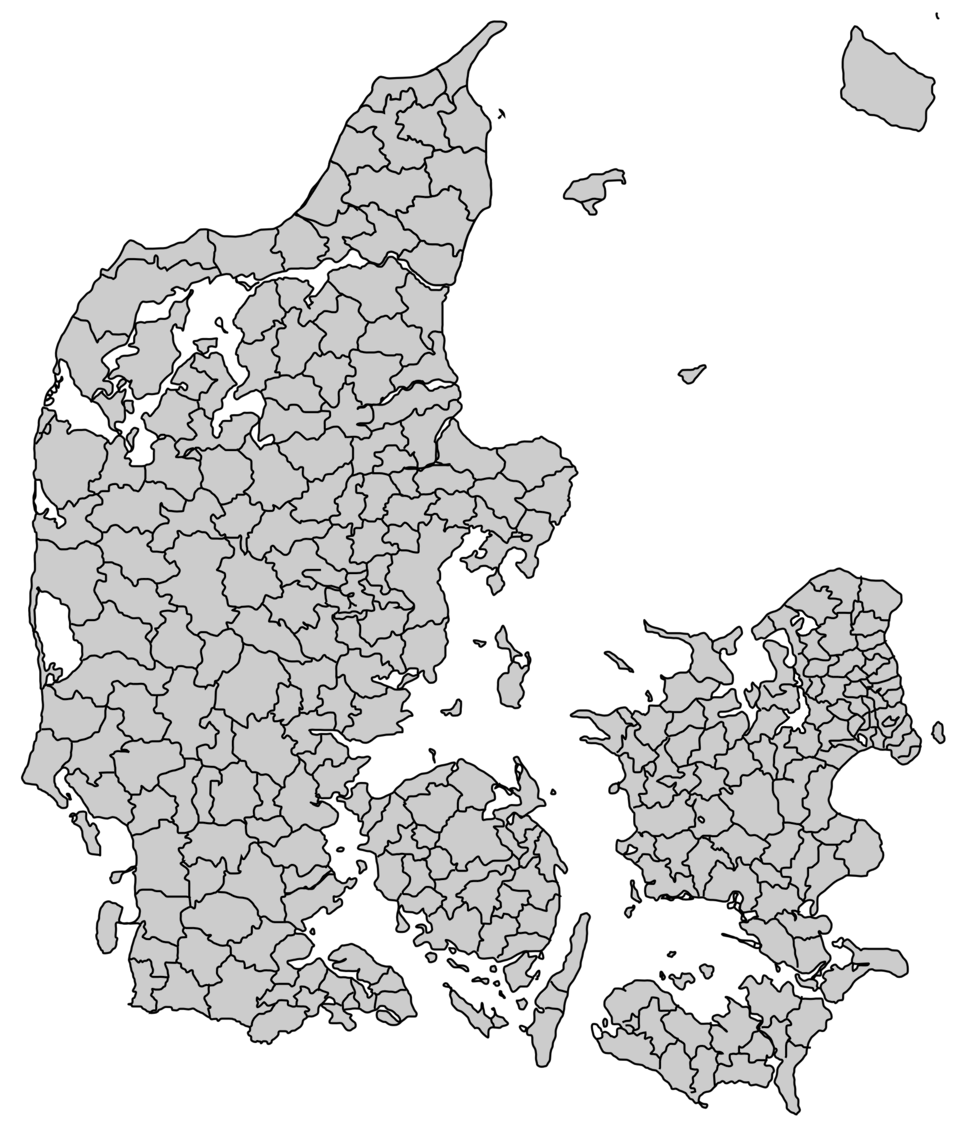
Denmark with its 1970-2006 municipalities Dansk: Danmark med kommunegrænserne fra 1970-2006